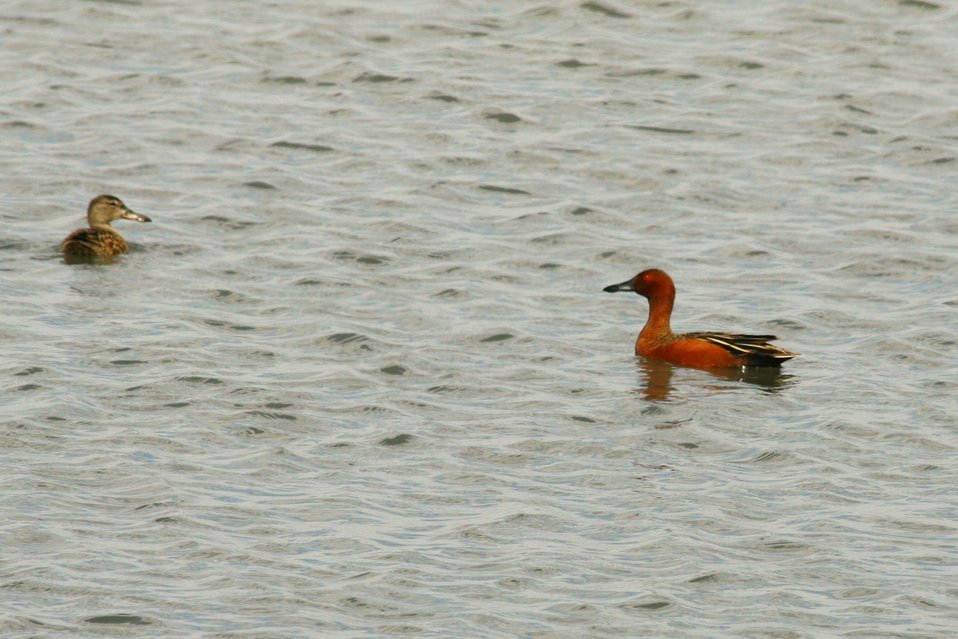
A Pair of Cinnamon Teal

The lands of the refuge were established to protect and provide habitat for migratory birds that cross State lines and international borders and are by law a Federal trust responsibility.

The refuge is of great value to waterfowl and shorebirds, as well as other migrating water-dependent bird species, because of the diversity of wetland and upland habitats that provide for the diverse life cycle needs of these species.